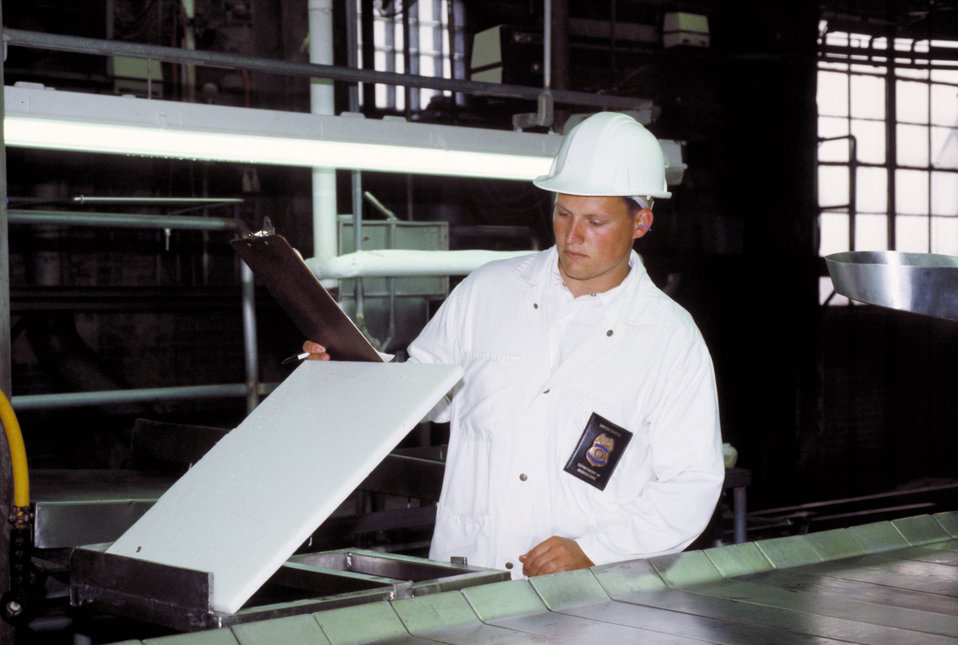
U.S. Department of Agriculture’s (USDA) Food Safety Inspection Service (FSIS) veterinarian conducts sanitation standard operating procedures at a critical control point on operating equipment to ensure that the facility is conducting its operation in a sanitary environment and in compliance with the USDA FSIS Hazard Analysis and Critical Control Points (HACCP) requirements on June 15, 1992.